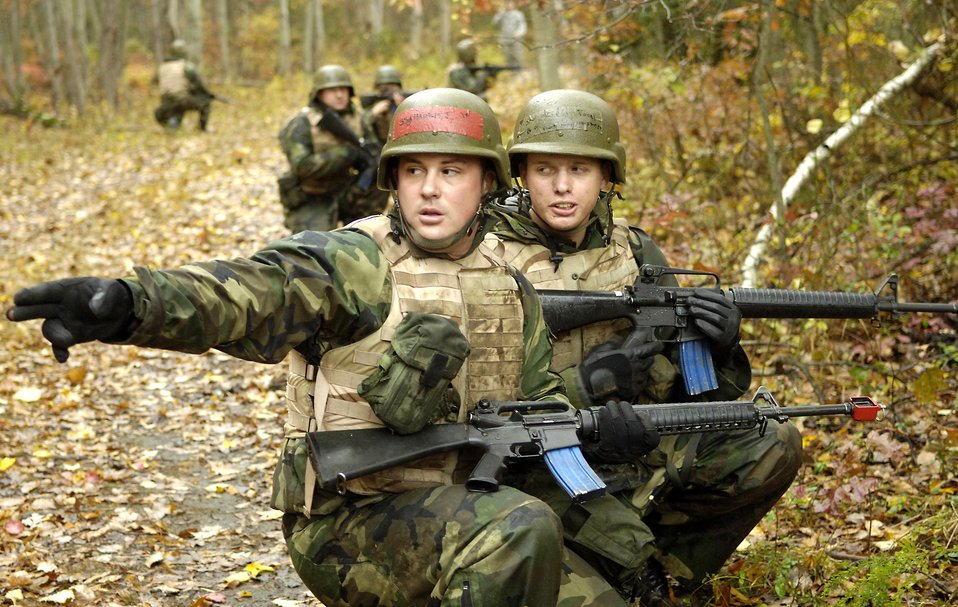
Preparing for deployment

Staff Sgt. Justin Harris directs his squad members during an